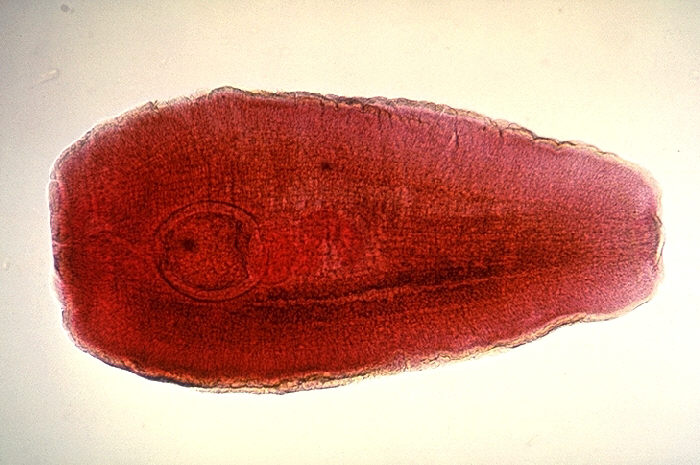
Proglottid of Mesocestoides sp.